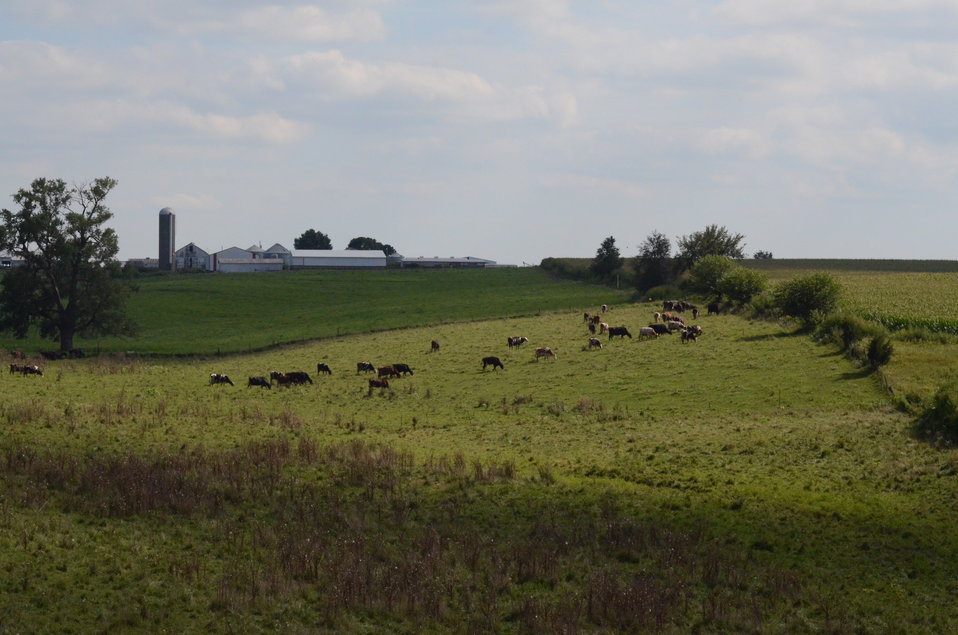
Dairy Farm near Poesta, IA, on Tuesday, Aug. 16, 2011.